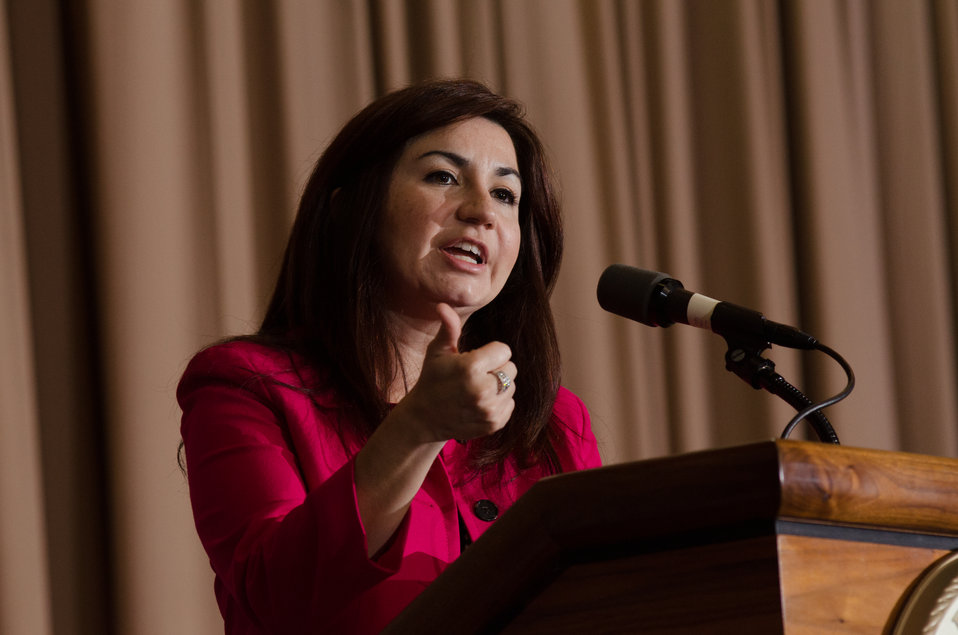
U.S. Department of Agriculture (USDA) Office of Human Resources Management, Office of Diversity and Inclusion, Director, Veronica Villalobos, presents opening remarks, during the 2013 National Hispanic Heritage Month ”Hispanics: Serving and Leading our Nation with Pride and Honor,” on Thursday, Sept. 19, 2013, in the Jefferson Auditorium, USDA Headquarters, Washington, D.C.